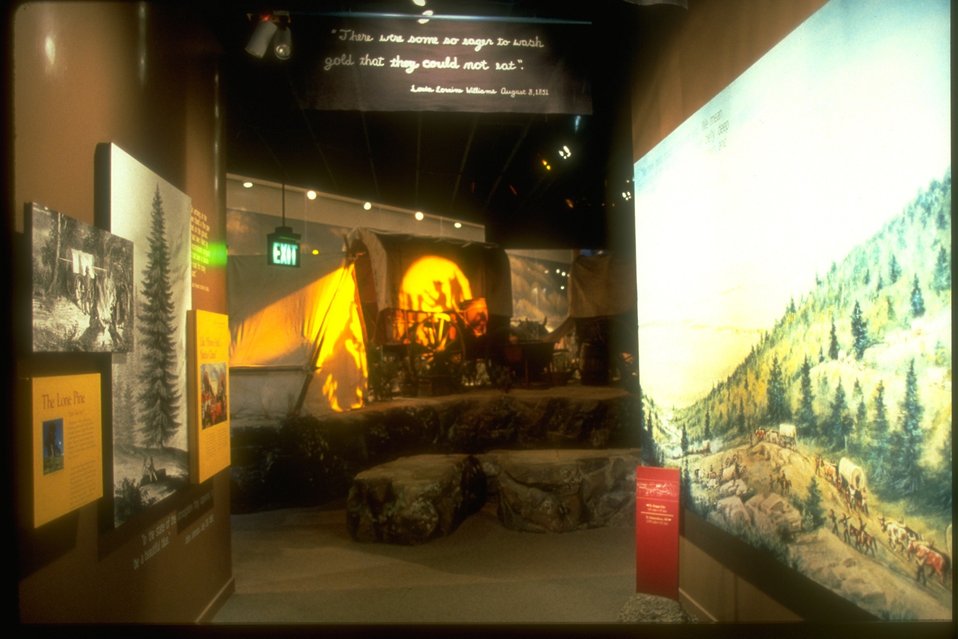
Static display at the NHOTIC. Camp in sight of the Blues.